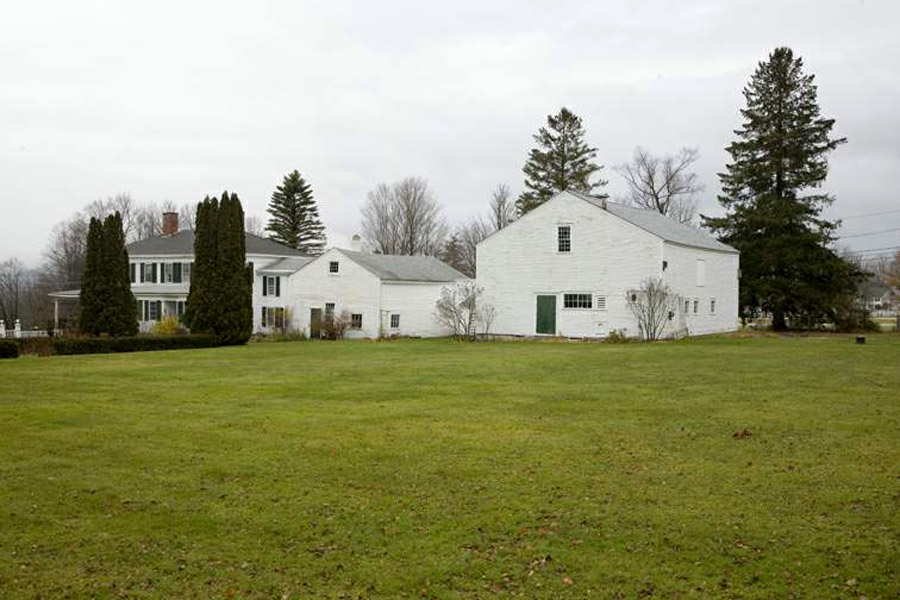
Retired chaplain's life shining example of duty, faith

The home in Haverhill, N.H., where retired Lt. Col. James Good Brown lives.